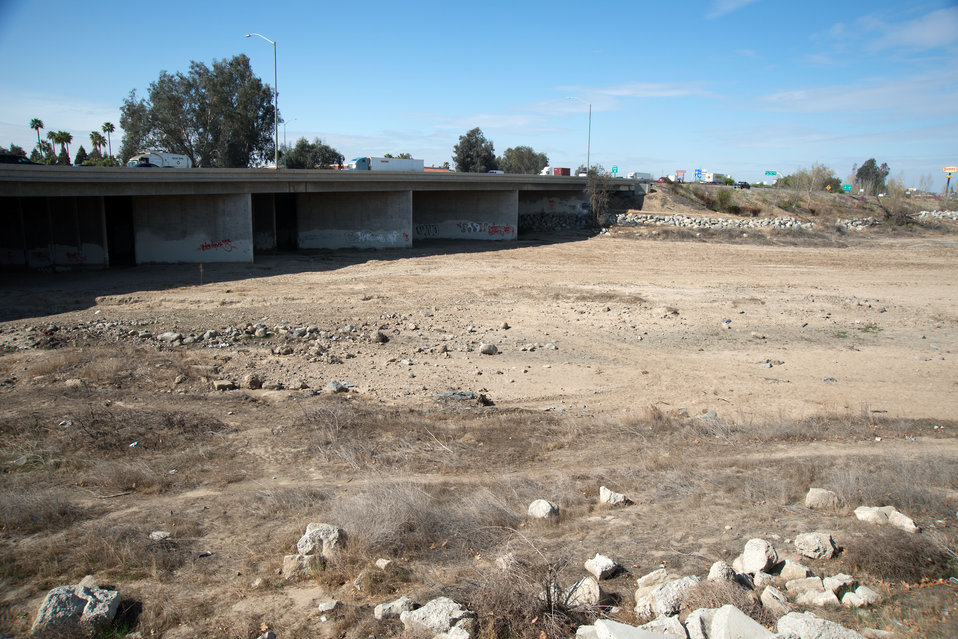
The drought has caused this riverbed to dry up along Highway 99 near Bakersfield, CA on Feb. 26, 2014.